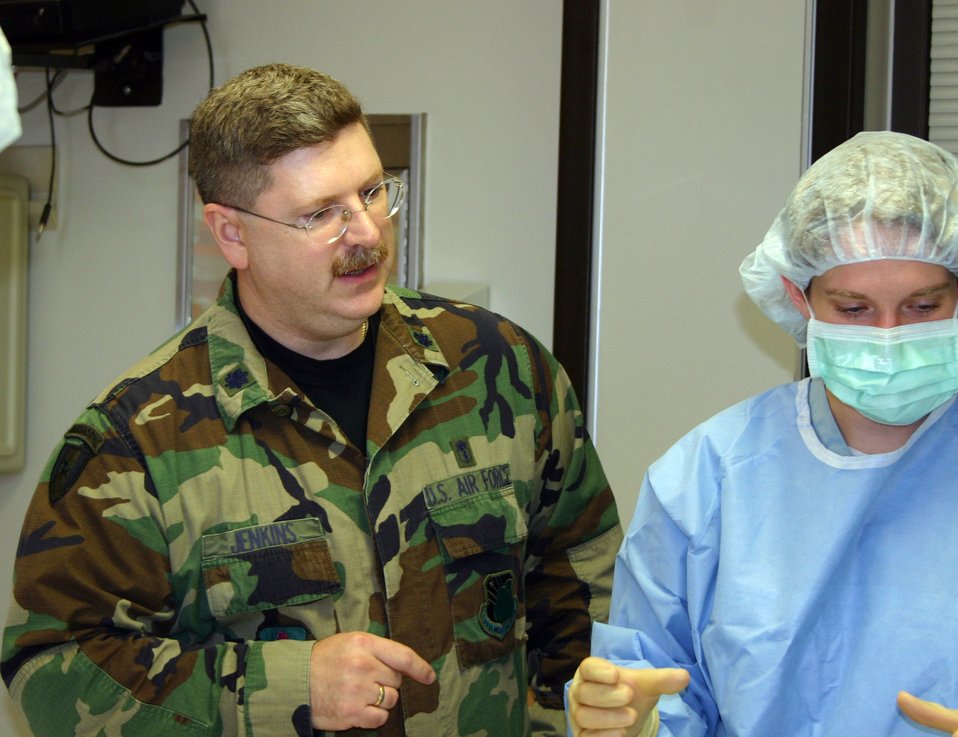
Trauma doc

LACKLAND AIR FORCE BASE, Texas (AFPN) -- Lt. Col. (Dr.) Donald Jenkins will be the next theater trauma director in Iraq. The Department of Defense Combat Trauma Surgical Committee selected him for the job. The colonel will help provide the best care for injured troops deployed in the area. Dr. Jenkins is the chief of trauma at Wilford Hall Medical Center here.